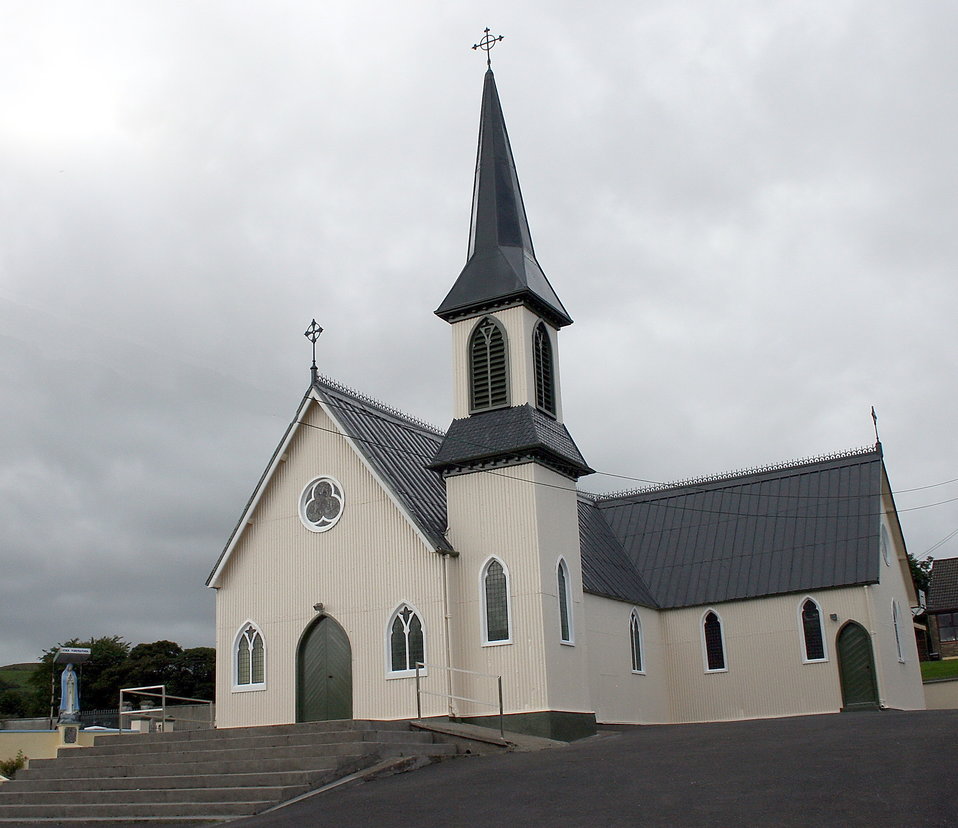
Church in Rearcross, County Tipperary, Ireland